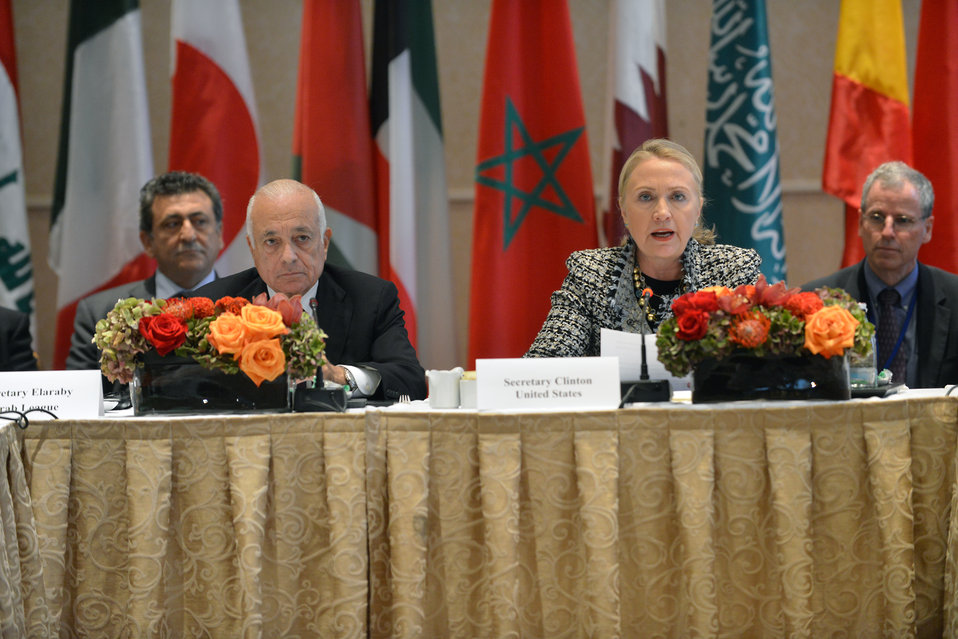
Secretary Clinton Hosts Ad Hoc Friends of the Syrian People Ministerial

U.S. Secretary Clinton hosts the Ad Hoc Friends of the Syrian People Ministerial, at the Waldorf Astoria in New York City, September 28, 2012.